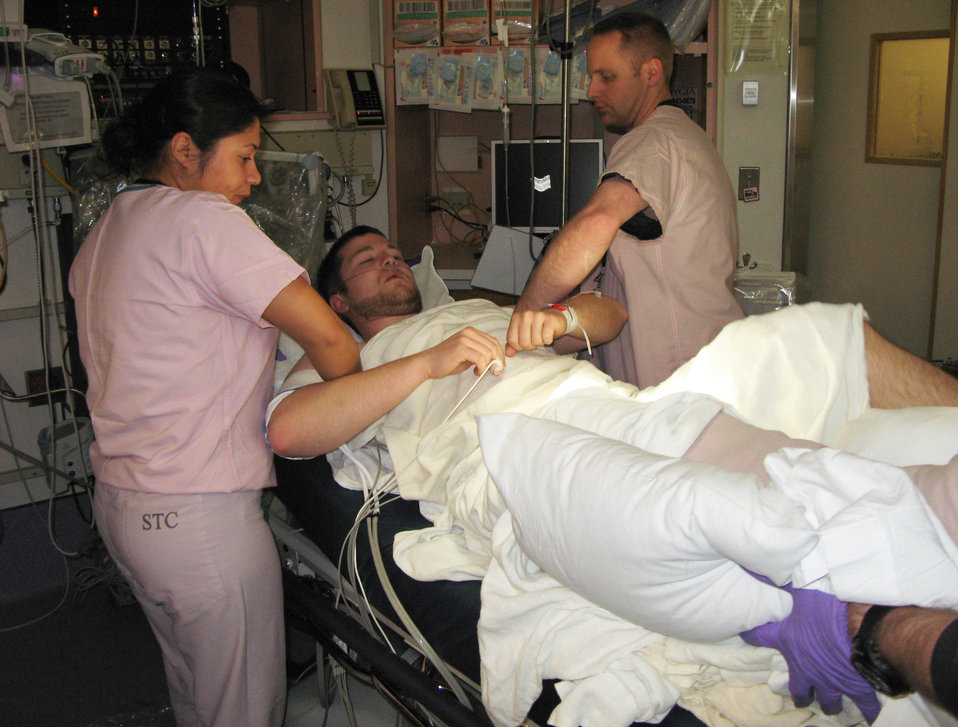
Pre-deployment trauma training

Tech. Sgt. Josh Vest and Staff Sgt. Catalina Meissner, both aerospace medical technicians scheduled to deploy to Afghanistan, treat Shayne Wilson, who suffered severe leg injuries after his car ran into two deer, during the Centers for Sustainment of Trauma and Readiness Skills program at the R. Adams Cowley Shock Trauma Center in Baltimore on Feb. 1, 2012.